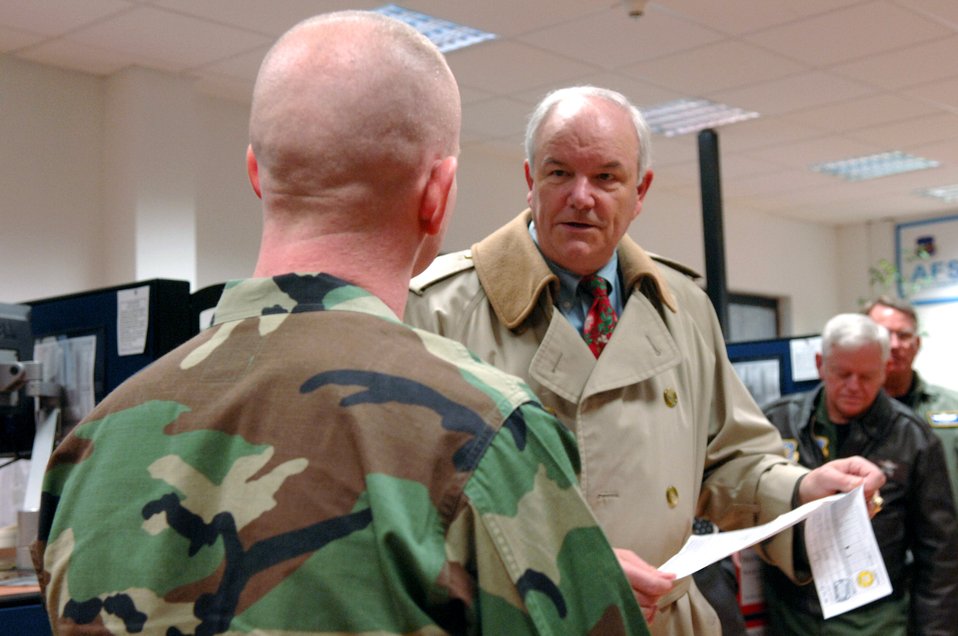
USAFE hosts AFSO 21 process council

Secretary of the Air Force Michael W. Wynne (right) talks to Maj. Jeffrey Carter about the vehicle registration process by the 569th U.S. Force Protection Squadron Dec. 11 at Ramstein Air Base, Germany. Using Air Force Smart Operations for the 21st century, unit members cut the time required to register a vehicle from about two hours to less than 30 minutes.